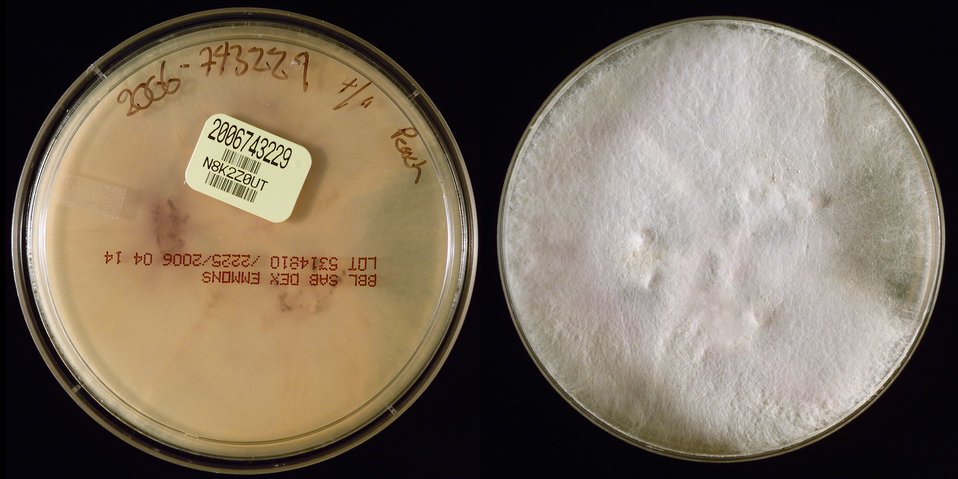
This image depicted two sides of a Petri dish, which had been inoculated with a specimen extracted from an opened bottle of contact lens solution, obtained from a New Jersey Fusarium keratitis-patient, and had subsequently grown a filamentous colony of Fusarium oxysporum fungal organisms. The type of agar medium in the case of this specimen was Sabouraud Dextrose (SAB). While it is not unusual for Fusarium to cause keratitis, it was the number of affected individuals, which had increased dramatically, predominantly in persons wearing contact lenses, that had warranted this epidemiologic study. The laboratory received cultures which came from two sources: Fusarium spp. isolated from the eyes of patients with fungal keratitis, and cultures from contact lenses, cases and/or lens solution.